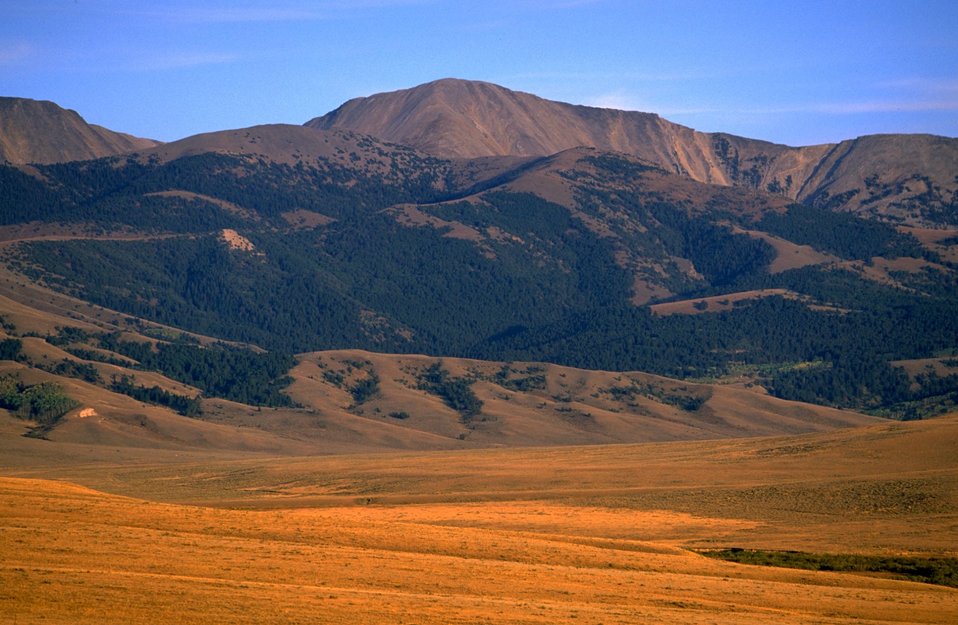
Contrasting colors between the mountains and the meadow